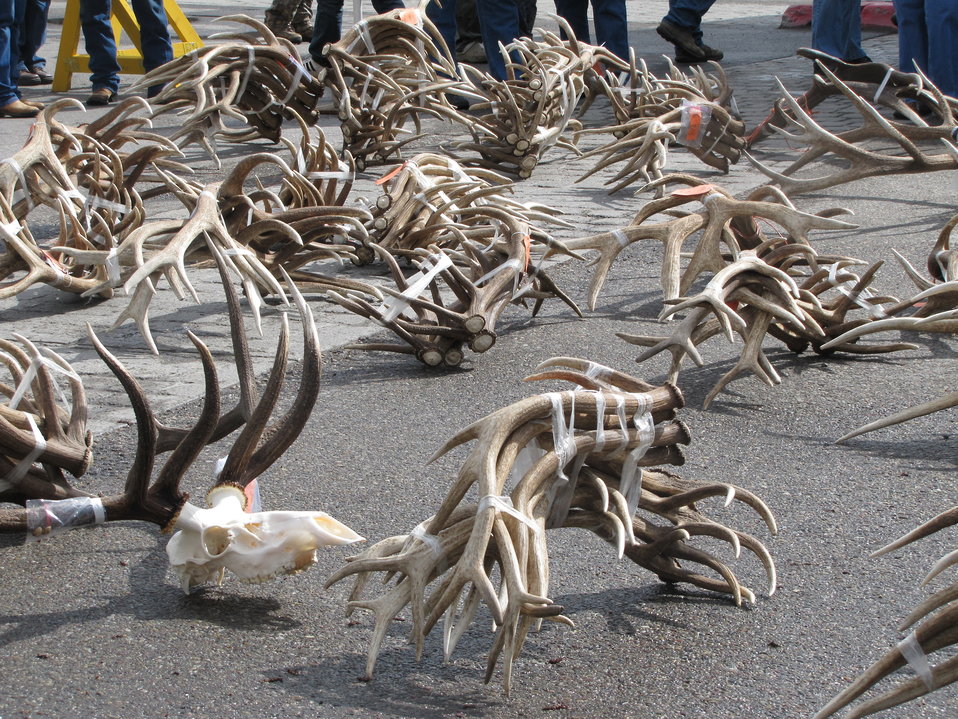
Bundles of Antlers Ready for Sale

Antlers are sold in lots at the auction, with each bundle made up of a varying number of antlers. Scout leaders spend hundreds of hours bundling, weighing, and tagging each lot. During the auction, the antlers are sold per pound, so bidders need to know the total weight of lots they may be interested in purchasing.